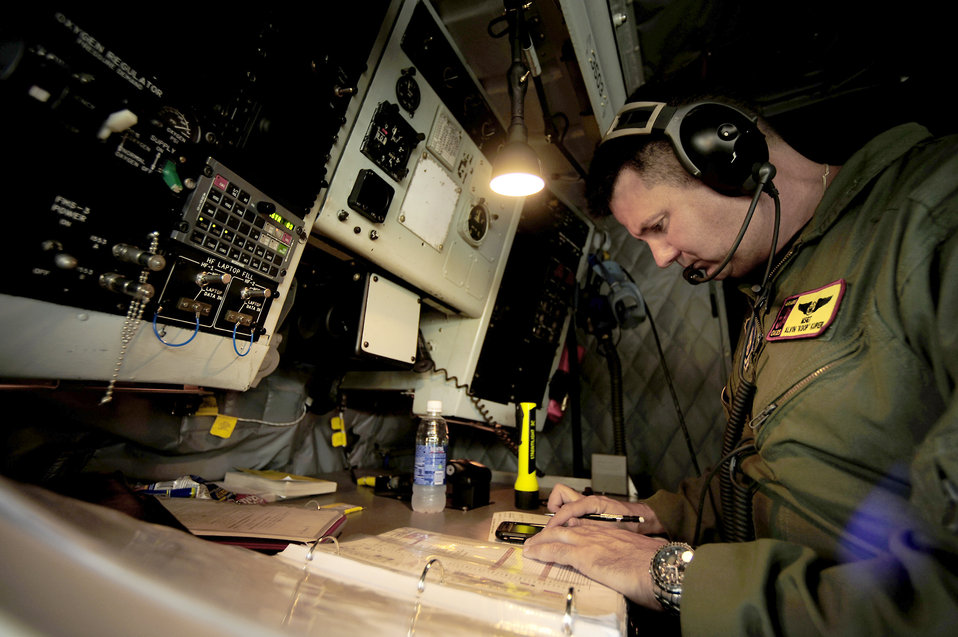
Rim of the Pacific exercise

Master Sgt. Alvin Kuper completes a pre-flight checklist aboard a KC-135 Stratotanker for an air refueling mission in support of the Rim of the Pacific exercise July 10, 2010, over the Pacific Ocean. Sergeant Kuper is a boom operator assigned to the 465th Air Refueling Squadron at Tinker Air Force Base, Okla.